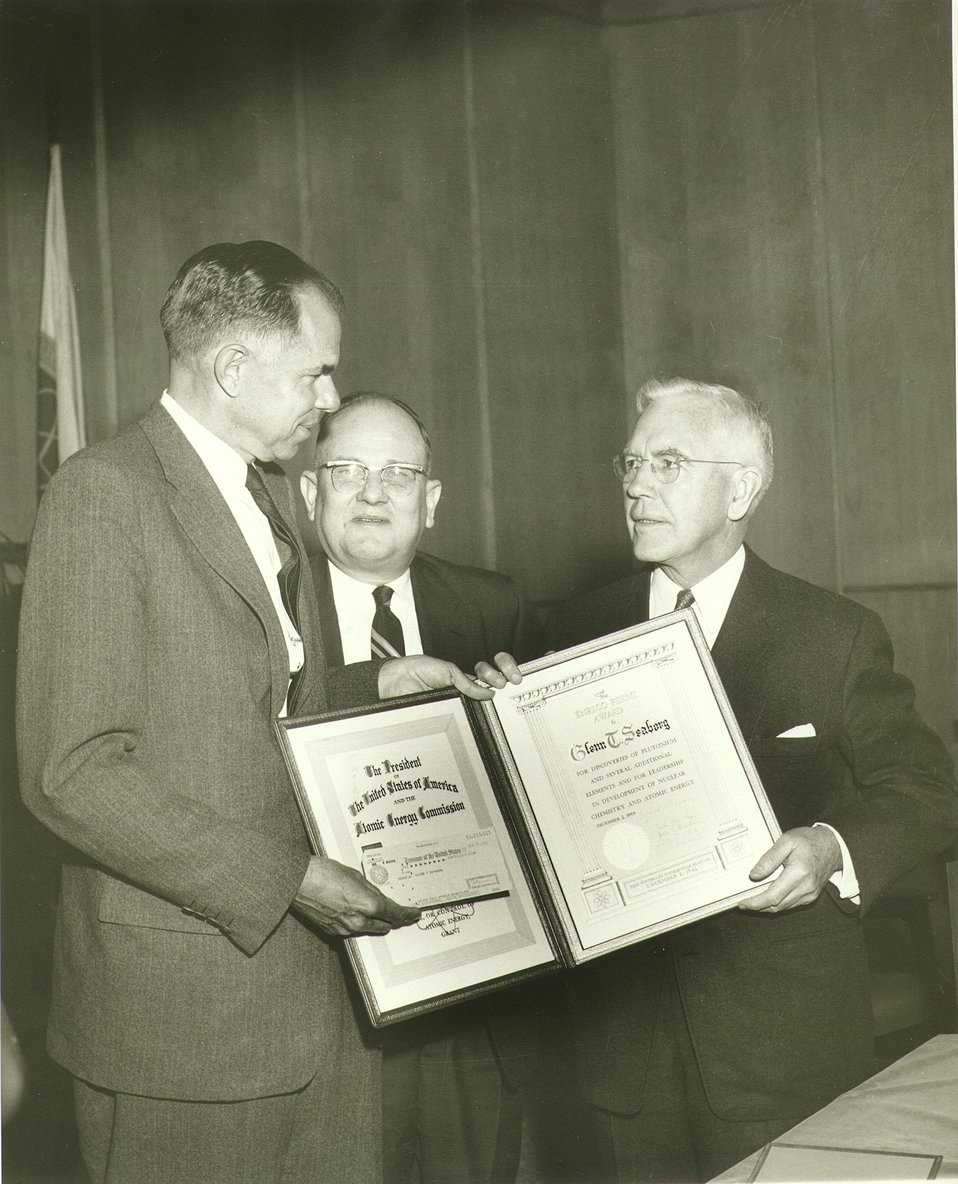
Glenn T. Seaborg. 1959.